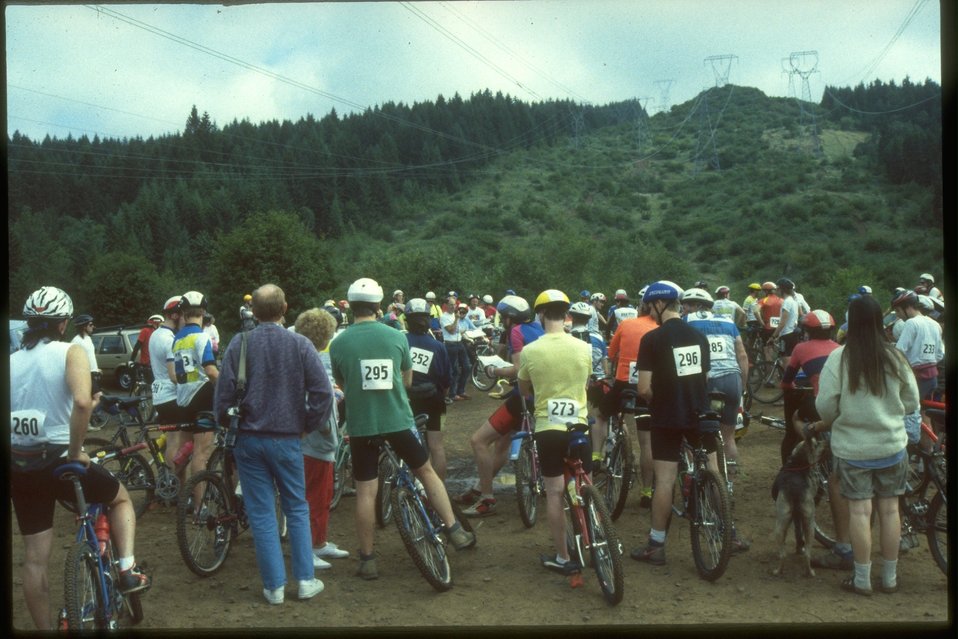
Mountain bike race in the Coburg Hills.